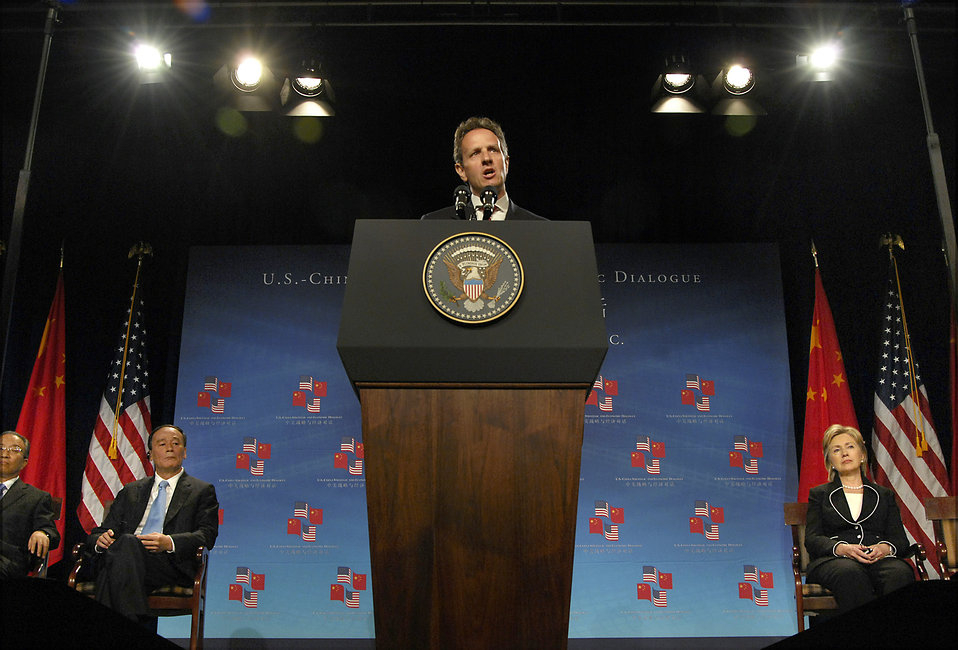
SandED: July 27-28, 2009

Secretary Geithner speaking at the U.S.-China Strategic and Economic Dialogue opening ceremonies on July 27, 2009.